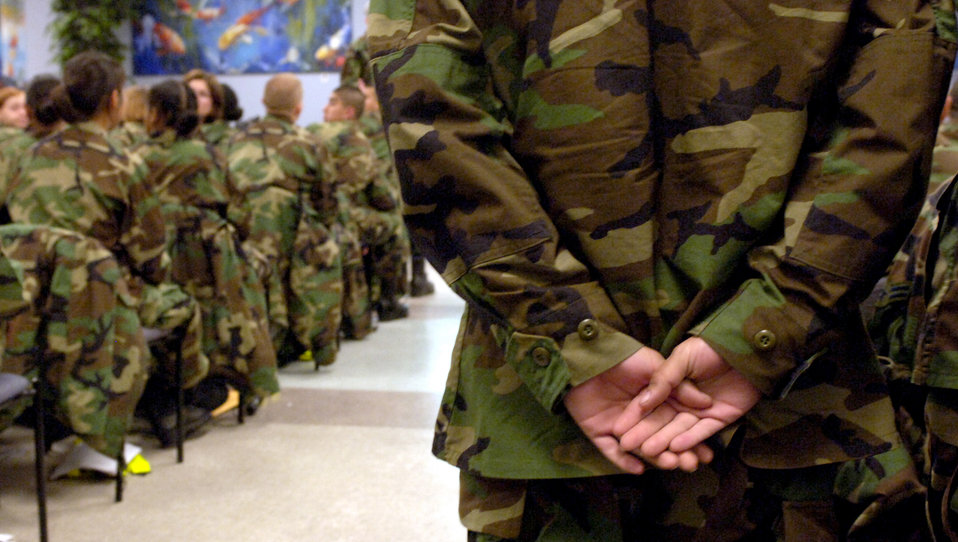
School's in session

KEESLER AIR FORCE BASE, Miss. (AFPN) -- Airman Darren Clark stands at parade rest while listening to Col. Deborah Van De Ven during the newcomer's briefing Feb.21. Technical resident courses include career fields such as personnel, information management, air traffic control, finance, manpower, communications-electronics maintenance, computer operation, maintenance and programming, weather, metrology, aircraft warning and control systems and radio operations. Colonel Van De Ven is commander of the 81st TRG.